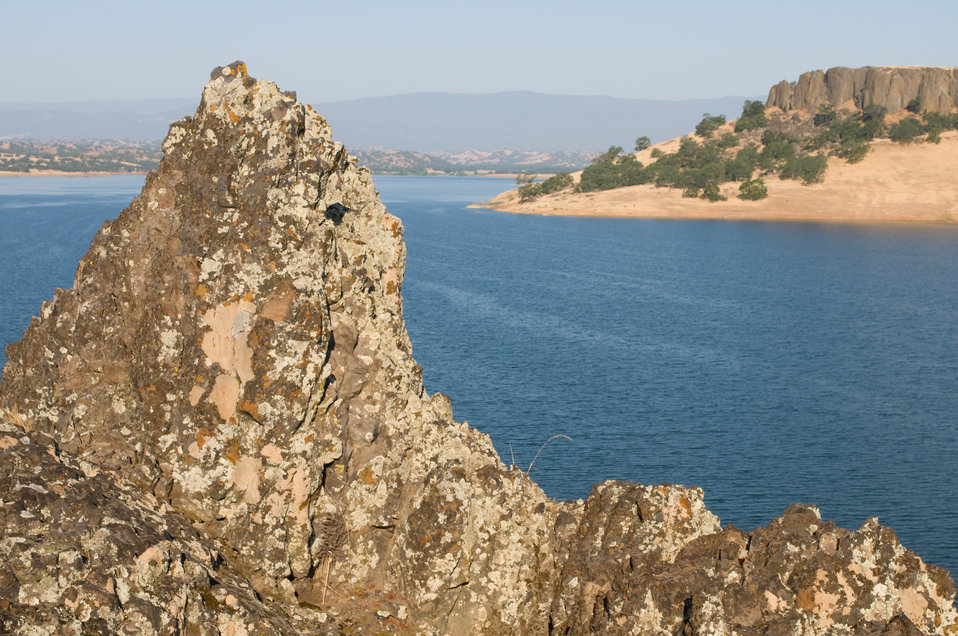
Black Butte Lake

Black Butte Dam, shown here May 28, 2009, is located near Orland, Calif., in Tehama and Glenn counties. Completed by the U.S. Army Corps of Engineers Sacramento District in 1963, the dam impounds Stony Creek, creating Black Butte Lake. When full, the lake has a surface area of 4,460 acres, is seven miles long and boasts a shoreline of 40 miles. The dam reduces flood risk for nearby towns and agricultural lands. Black Butte Lake and Dam are managed by the Sacramento District.